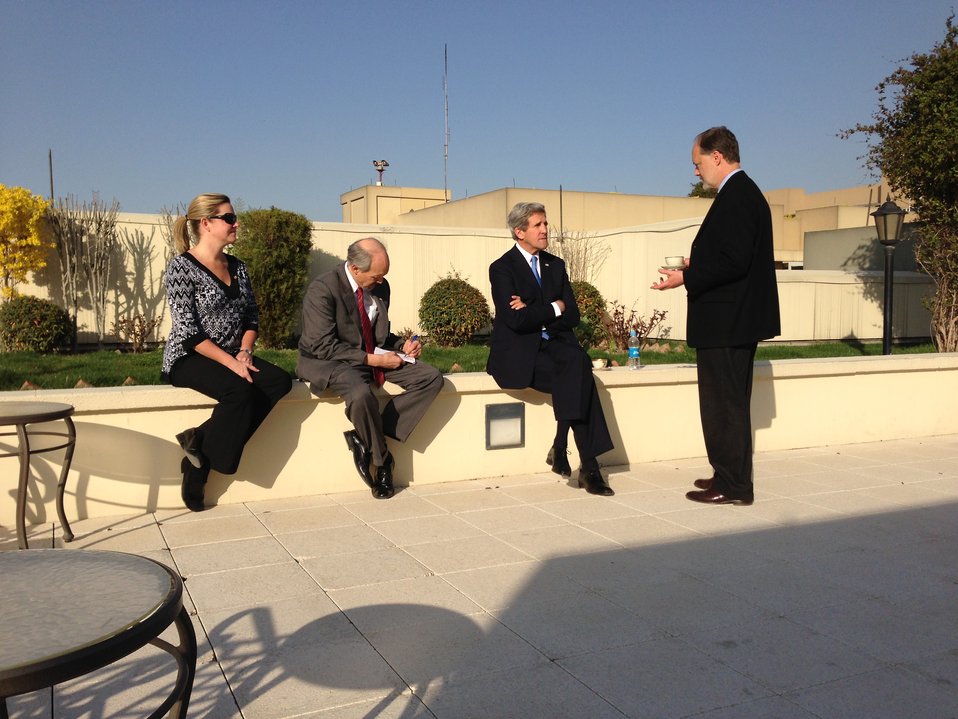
Secretary Kerry Confers with Staff in Kabul

U.S. Secretary of State John Kerry confers with aides Jennifer Davis, William Danvers, and U.S. Ambassador to Afghanistan James Cunningham in Kabul on March 25, 2013.